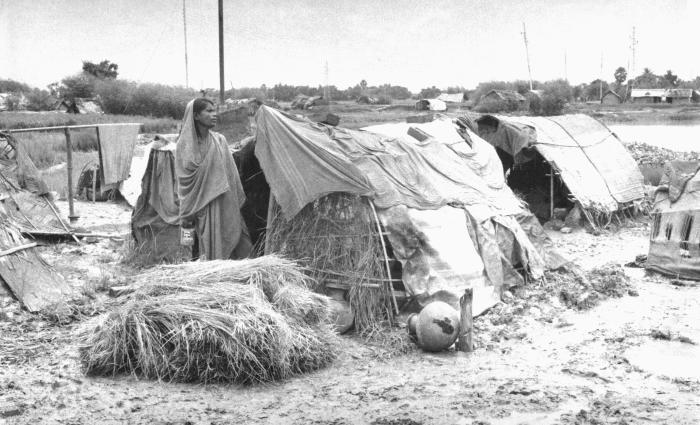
During smallpox eradication efforts of the 1970s, many people were displaced because to the lack of food, work, or as a result of flooding. In the hope of finding food and work, these displaced residents moved to the cities, were they constructed makeshift temporary living facilities. Given the circumstances, maintenance of proper hygienically-sound surroundings was at best, difficult, making it easier for diseases to spread, and fester. This image was part of a series provided by Dr. Stan Foster, and captured by Pierre Claquin, M.D., B.A.C., who at the time was a member of the World Health Organization's Smallpox Eradication Program. It was one of a series entitled 'The Story of One Smallpox Jeep', which depicted the travails faced by the jeep, and its occupants of public health practitioners, as they road through the Bangladesh countryside in an attempt to eradicate smallpox from the country.